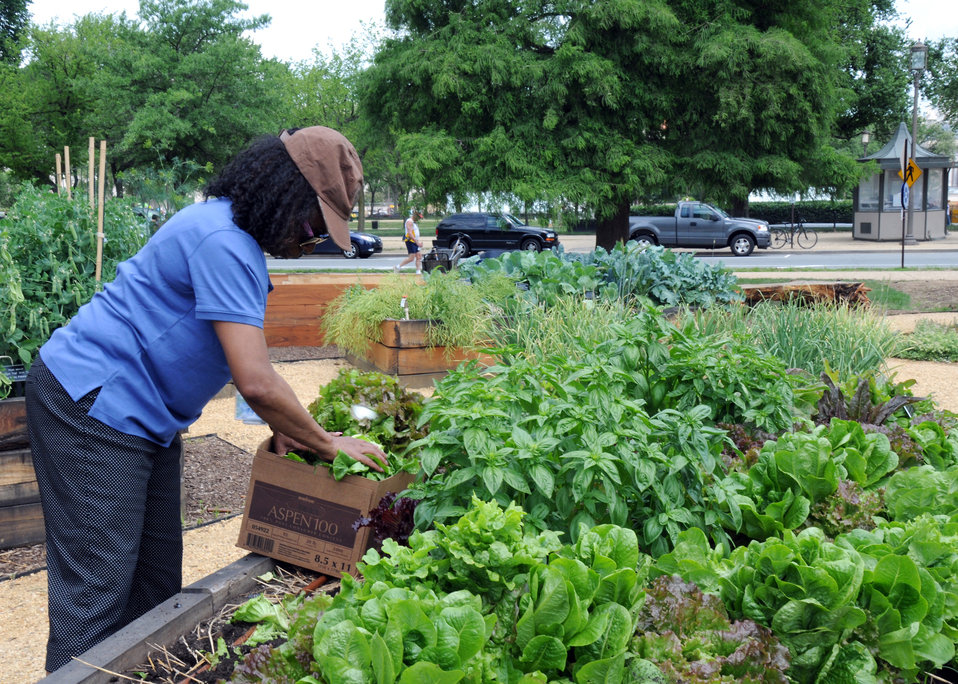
A U. S. Department of Agriculture (USDA) employee helps to harvest the first crop of lettuce from the USDA People’s Garden in Washington, DC, on Friday, May 28, 2010. All vegetables harvested are donated to local area food banks. USDA photo 10di1384-25.